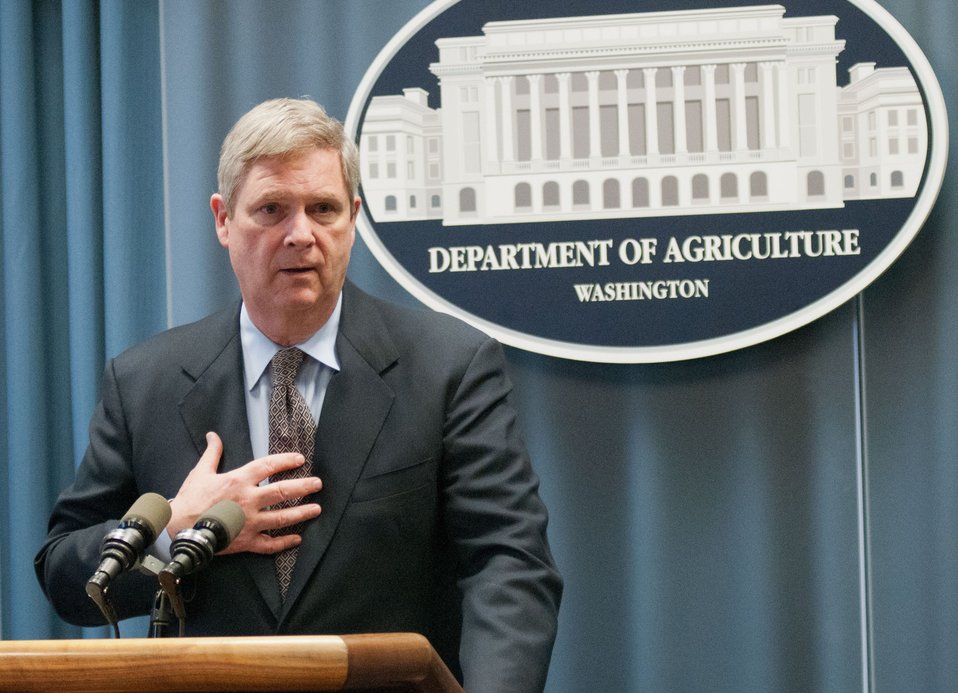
Agriculture Secretary Tom Vilsack talked about agriculture including the delivery, processing and other elements of the food chain the effect jobs in America, during a briefing, and question and answer period for stakeholders about the Agriculture FY2013 budget in Washington, D.C. on Monday, February 13, 2012.